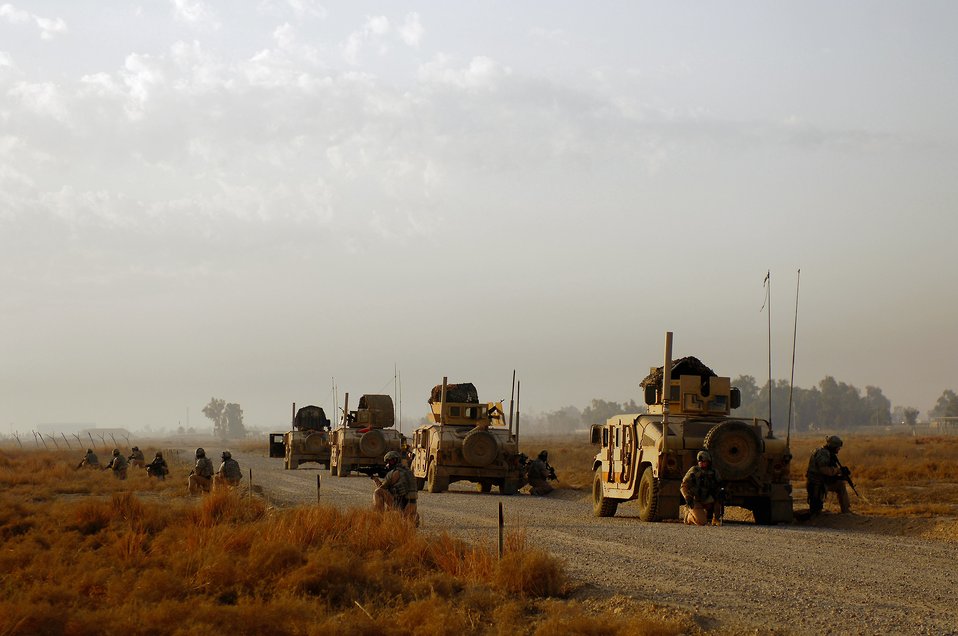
On patrol

Air Force security forces Airmen perform a dry run of rollover drills Mar. 3 prior to a patrol in the southwest area of Baghdad, Iraq. The Airman are assigned to Detachment 3 of the 732nd Expeditionary Security Forces Squadron at Sather Air Base, Iraq.